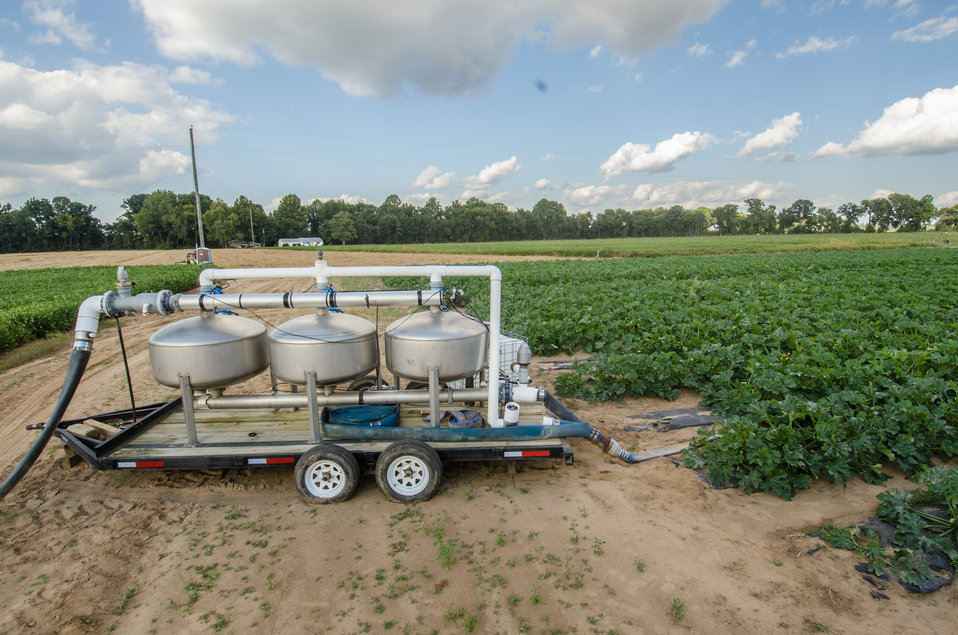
Kirby Farms third-generation family farm in Mechanicsville, VA, uses micro irrigation (drip watering) and plastic mulch (row covering) to efficiently grow green zucchini squash, on Friday, Sept 20, 2013. Water is pumped through a filtration/regulator system to flexible distribution pipes and hard connectors. Emitter hoses can be driven in where needed. Pressurized hoses emit water at a very slow rate near the base of the plants. Computers or timers provide additional controls. A micro irrigation system, also known as drip or trickle irrigation, is used to water directly to the plant root zone utilizing surface or subsurface applicators. For more information please see www.nrcs.usda.gov/Internet/FSE DOCUMENTS/nrcs141p2 024038...
Plastic sheeting is a form of mulch. It conserves soil moisture and reduces energy
use associated with irrigation, moderates soil temperature, provide erosion control, suppresses weed growth, facilitates the establishment of vegetative cover, improves soil quality, and reduces airborne particulates.